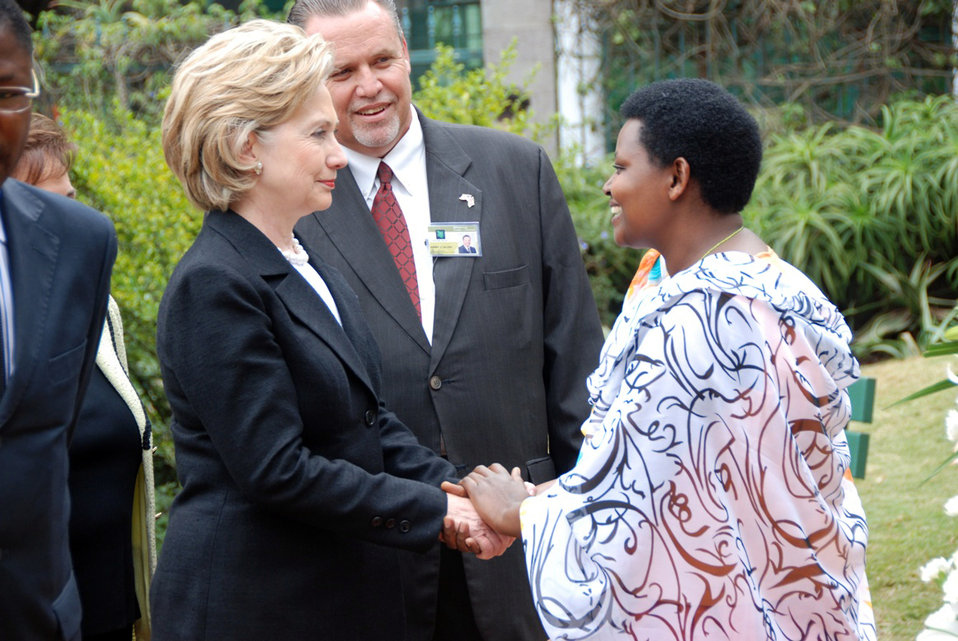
Secretary Clinton Attends Kenya Wreath Laying Ceremony

U.S. Secretary of State Hillary Rodham Clinton greets a participant at a wreath-laying ceremony in Memorial Park commemorating victims of the U.S. Embassy bombing, Nairobi, Kenya, August 6, 2009.